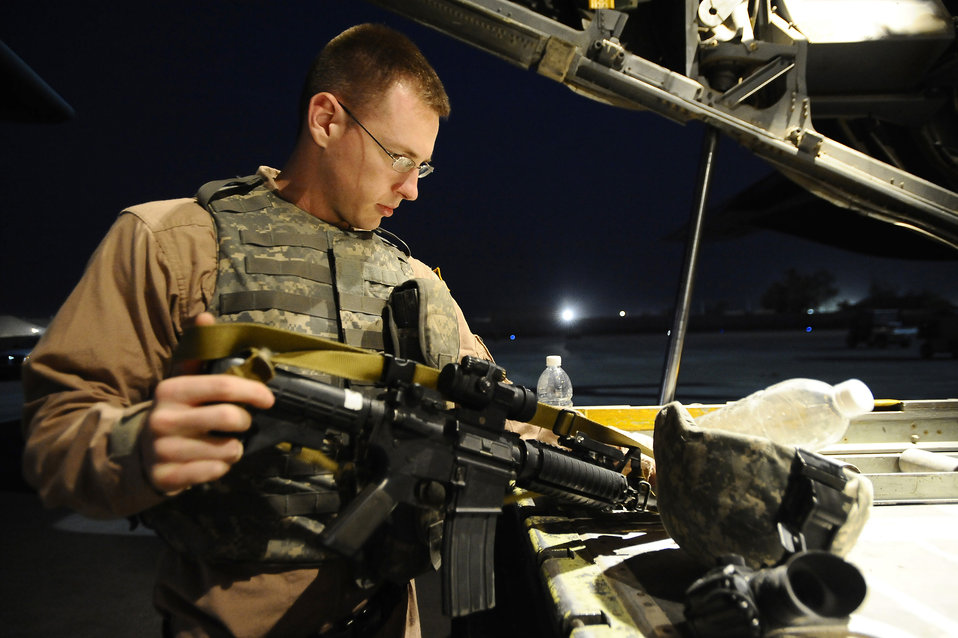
I'll fly away

Senior Airman Matthew Rinehart checks the weapon sling on the back of a C-130 Hercules Dec. 31, 2008, at Joint Base Balad. He serves as part of the aircraft's Fly Away Security Team, which provides ground security for the aircraft as it loads and unloads cargo at unsecured airfields. Airman Rinehart, a native of York, Pa., is deployed to the 332nd Expeditionary Security Forces Team from Andrews Air Force Base, Md.